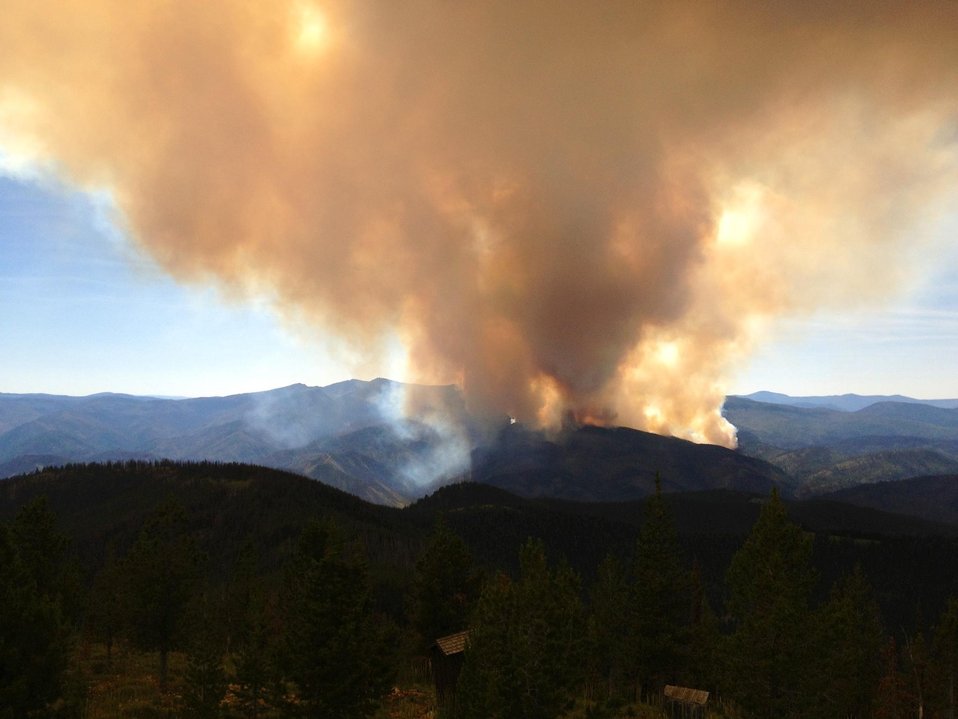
The Gold Pan Fire in the Bitterroot National Forest near Conner, MT began by lightning on Jul. 16, 2013 by lighting have consumed approximately 16,330 acres.